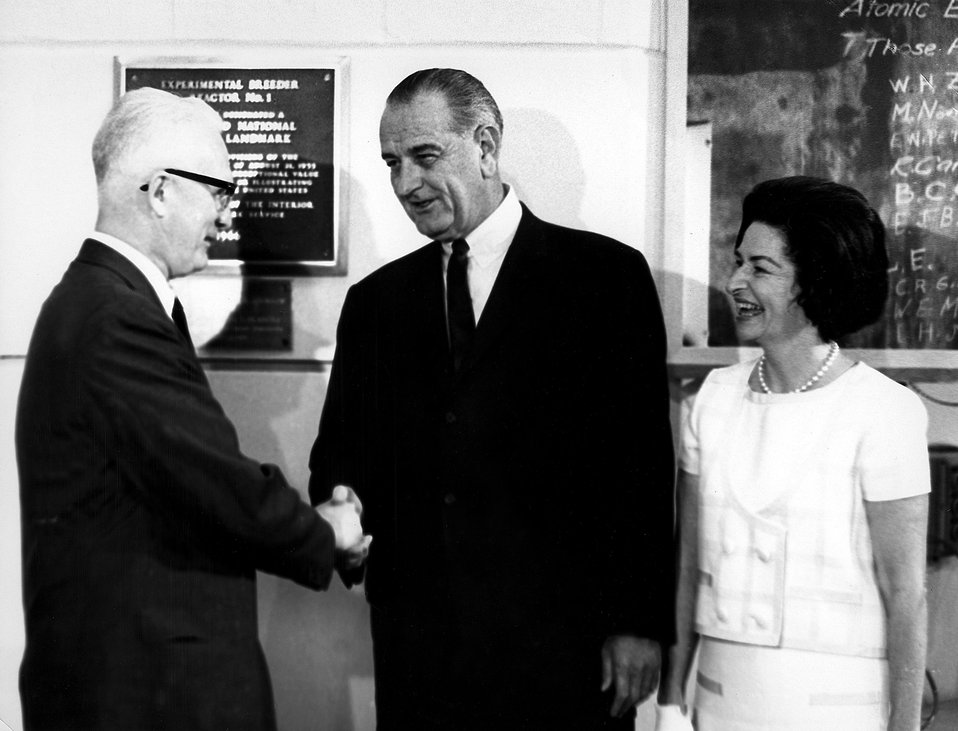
President Lyndon B. Johnson.